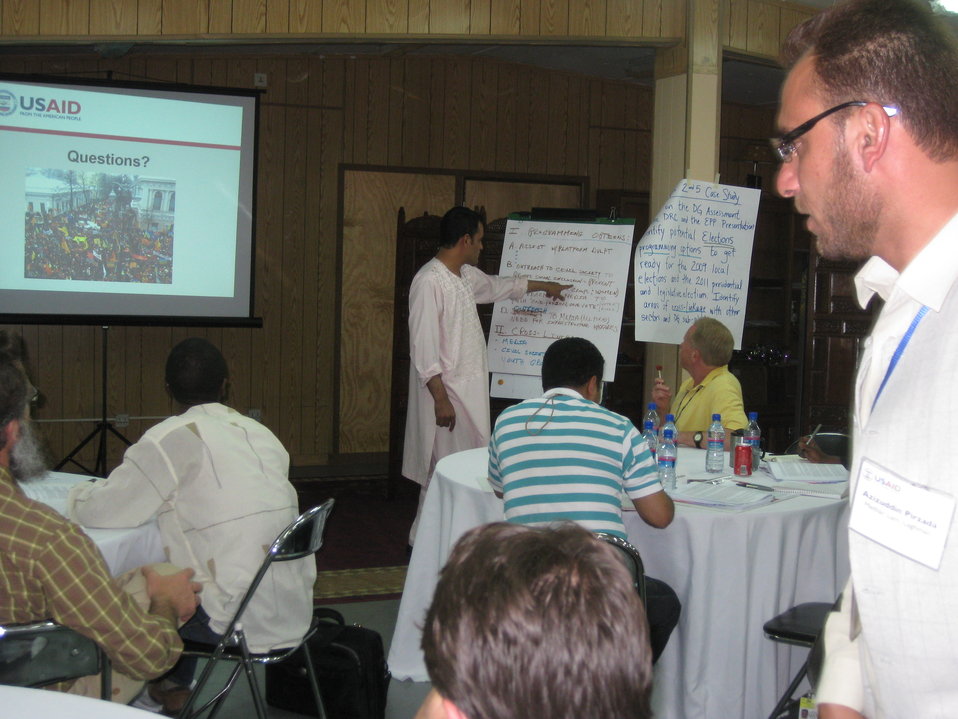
Afghan Youth Voices 040